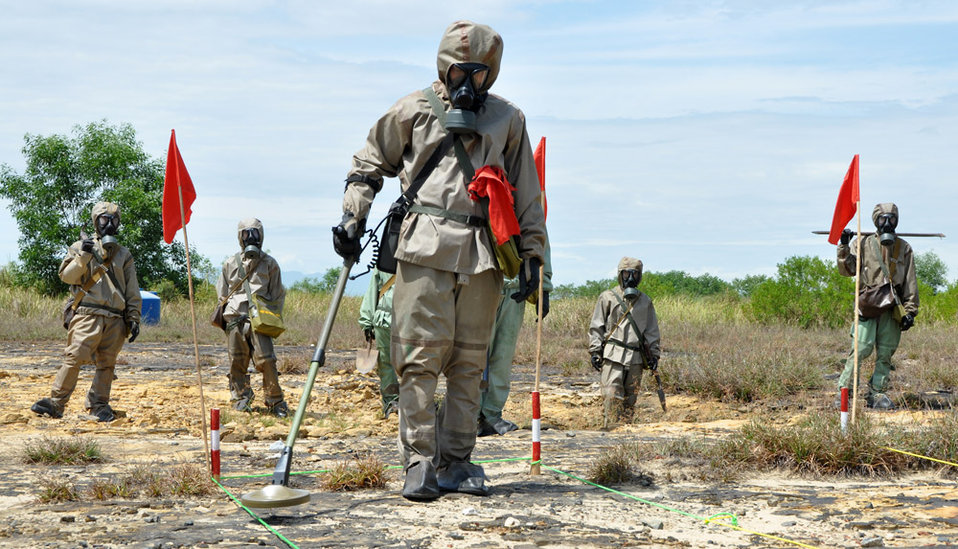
A Vietnamese soldier demonstrates UXO detection and clearance in Danang. June 17, 2011